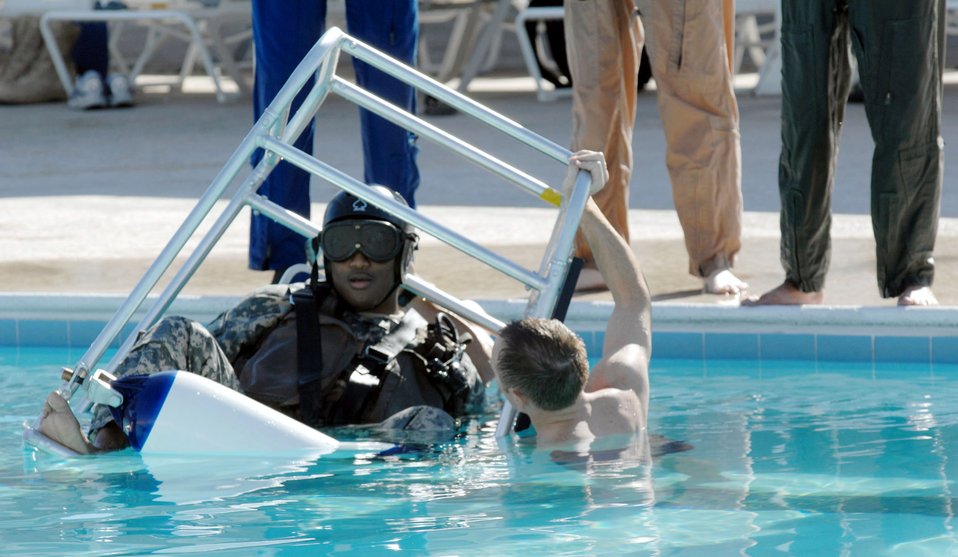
Practicing to be safe in the water

Staff Sgt. Michael Nettleingham instructs Army Staff Sgt. Joe Mangram on helicopter escape procedures in the event of a water landing. Sergeant Nettleingham is a survival, evasion, resistance and escape, or SERE, instructor at Nellis Air Force Base, Nev. Sergeant Mangram, a Nevada Army National Guardsman, was taking his annual water survival training.